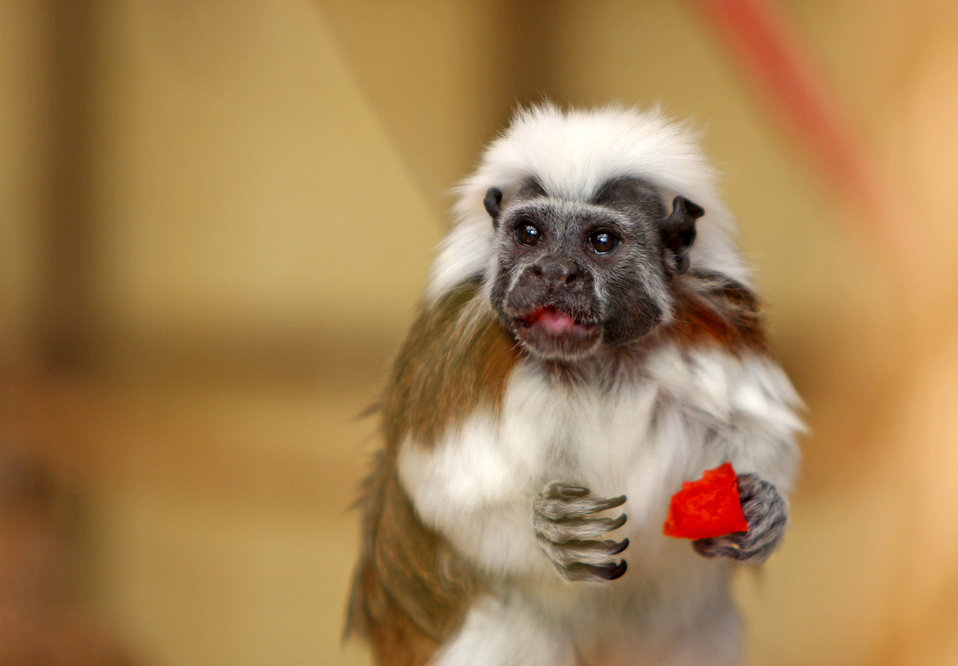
Monkey - tamarin cotton top

Close-up portrait of a cute little tamarin cotton top monkey.